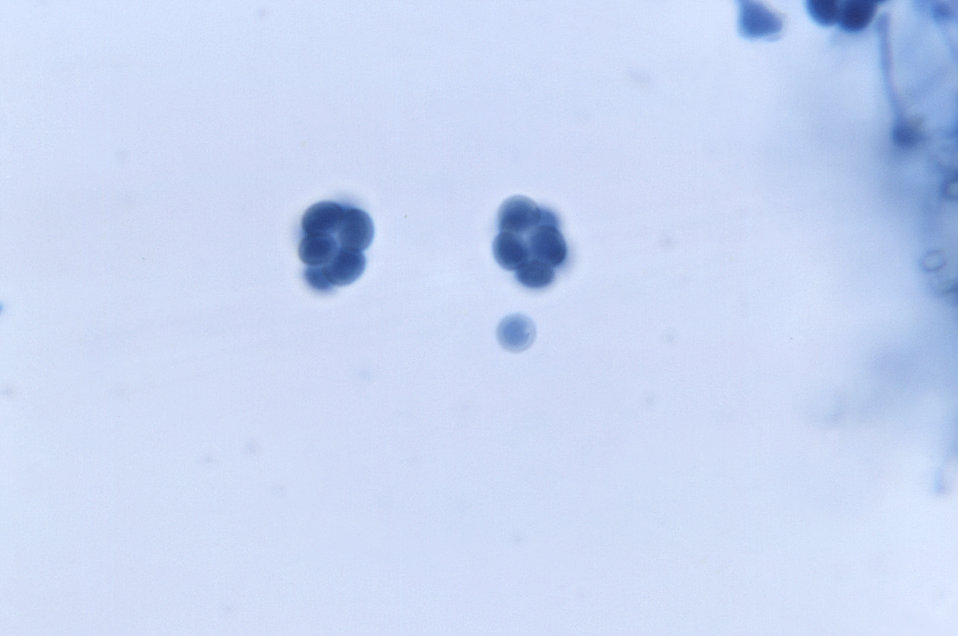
Under a relatively-low magnification of 375X, this photomicrograph revealed the presence of two Gymnoascus demonbreunii asci, and their contents of ascospores.